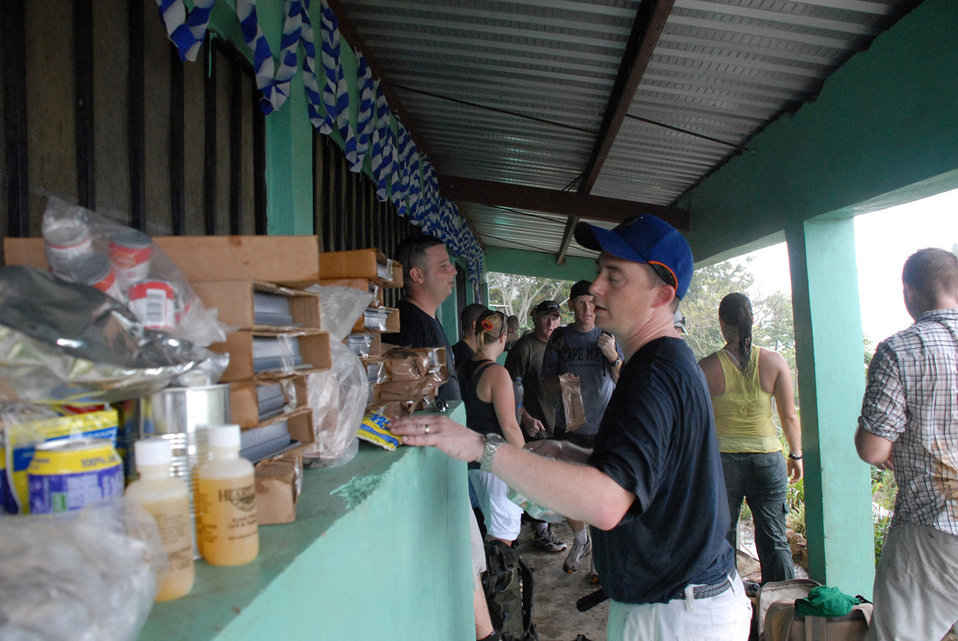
Servicemembers deliver food to Honduran mountain village

Capt. Mike Epper stacks the food he carried up Comayagua Mountain Oct. 20 outside of the Bella Vista school in Honduras. Captain Epper was one of approximately 50 servicemembers from Joint Task Force Bravo at Soto Cano Air Base, Honduras, who participated in the hike, helping to carry nearly 450 pounds of food to citizens in Bella Vista. The hike was organized by the JTF-Bravo chaplain to support local Hondurans.